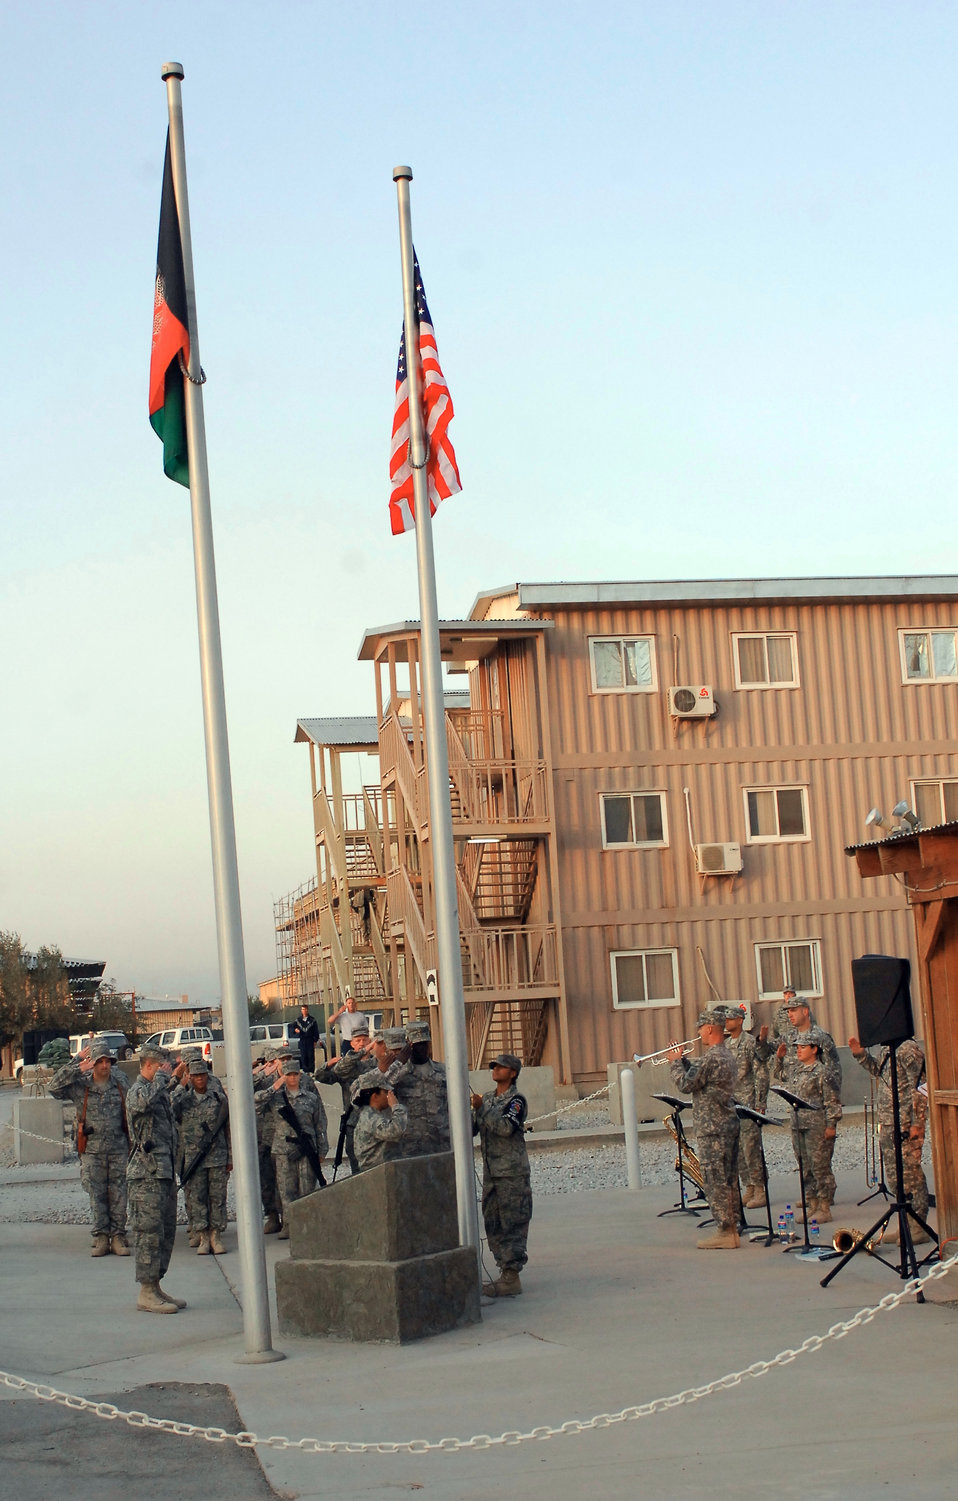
Warfighters take time for Air Force's 62nd birthday

The Bagram Airfield honor guard team raises the American flag on the 62nd Air Force birthday Sept. 18, 2009, at Camp Cunningham, Afghanistan. The camp is named after pararescueman Senior Airman Jason D. Cunningham, who gave his life in Afghanistan in March 2002 saving 10 lives and making it possible for seven others who were killed to come home.